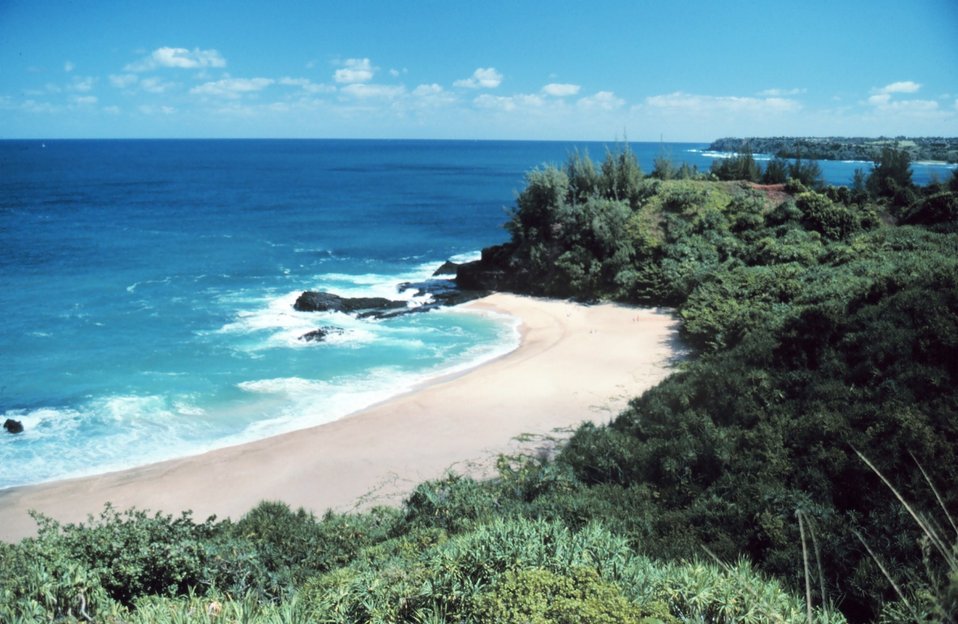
Kauai beach where 'From Here to Eternity' was filmed